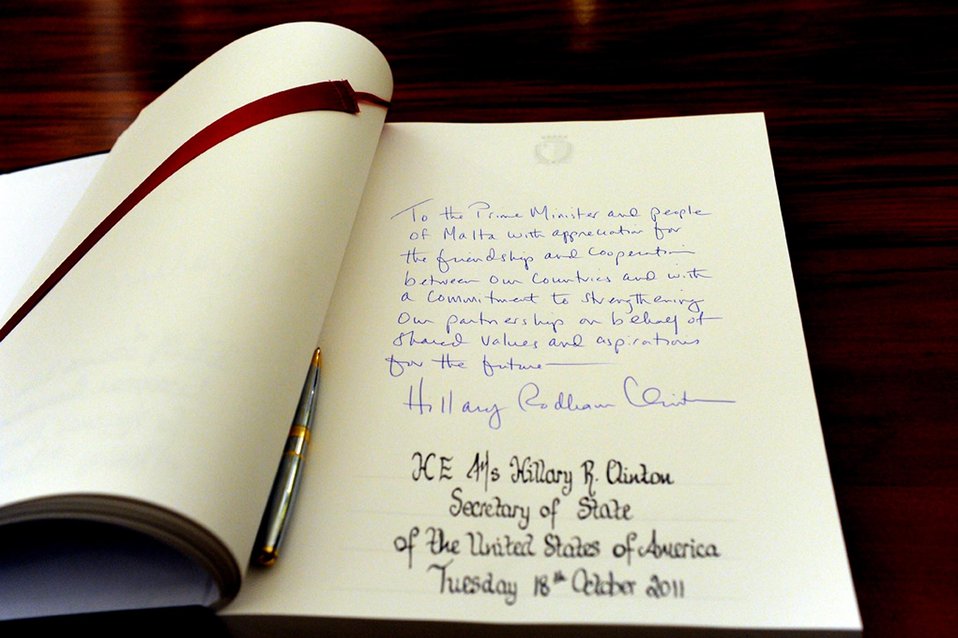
Secretary Clinton's Note in the Visitors' Book Is Photographed

U.S. Secretary of State Hillary Rodham Clinton's note in the Visitors’ Book at the Auberge de Castille in Valletta, Malta, is photographed on October 18, 2011.